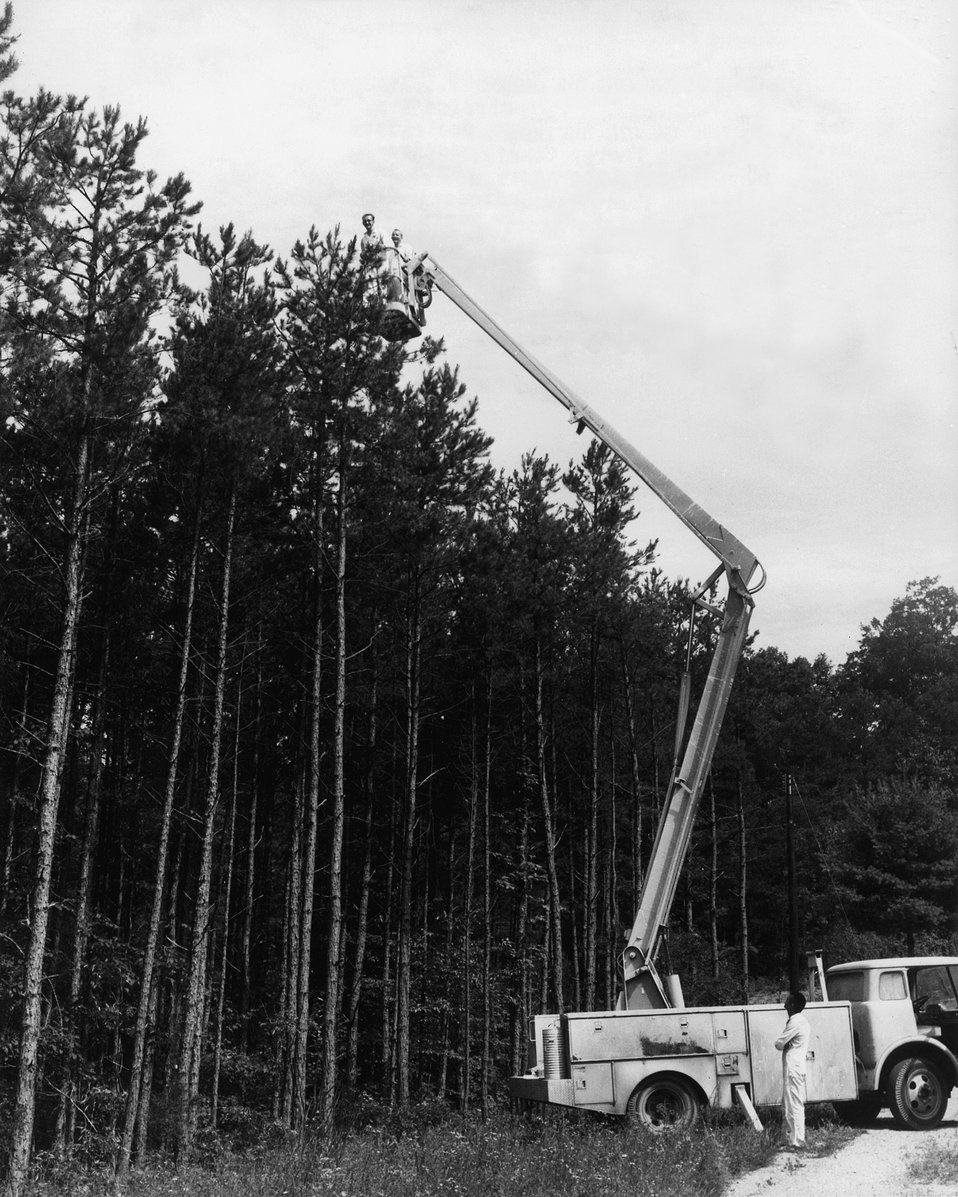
RADIOISOTOPES IN THE ENVIRONMENT...At the U.S. Atomic Energy Commission's Oak Ridge National Laboratory ecologists using a lift truck sample radioactive-tagged foliage and other tree parts in a forest ecosystem. c. 1972